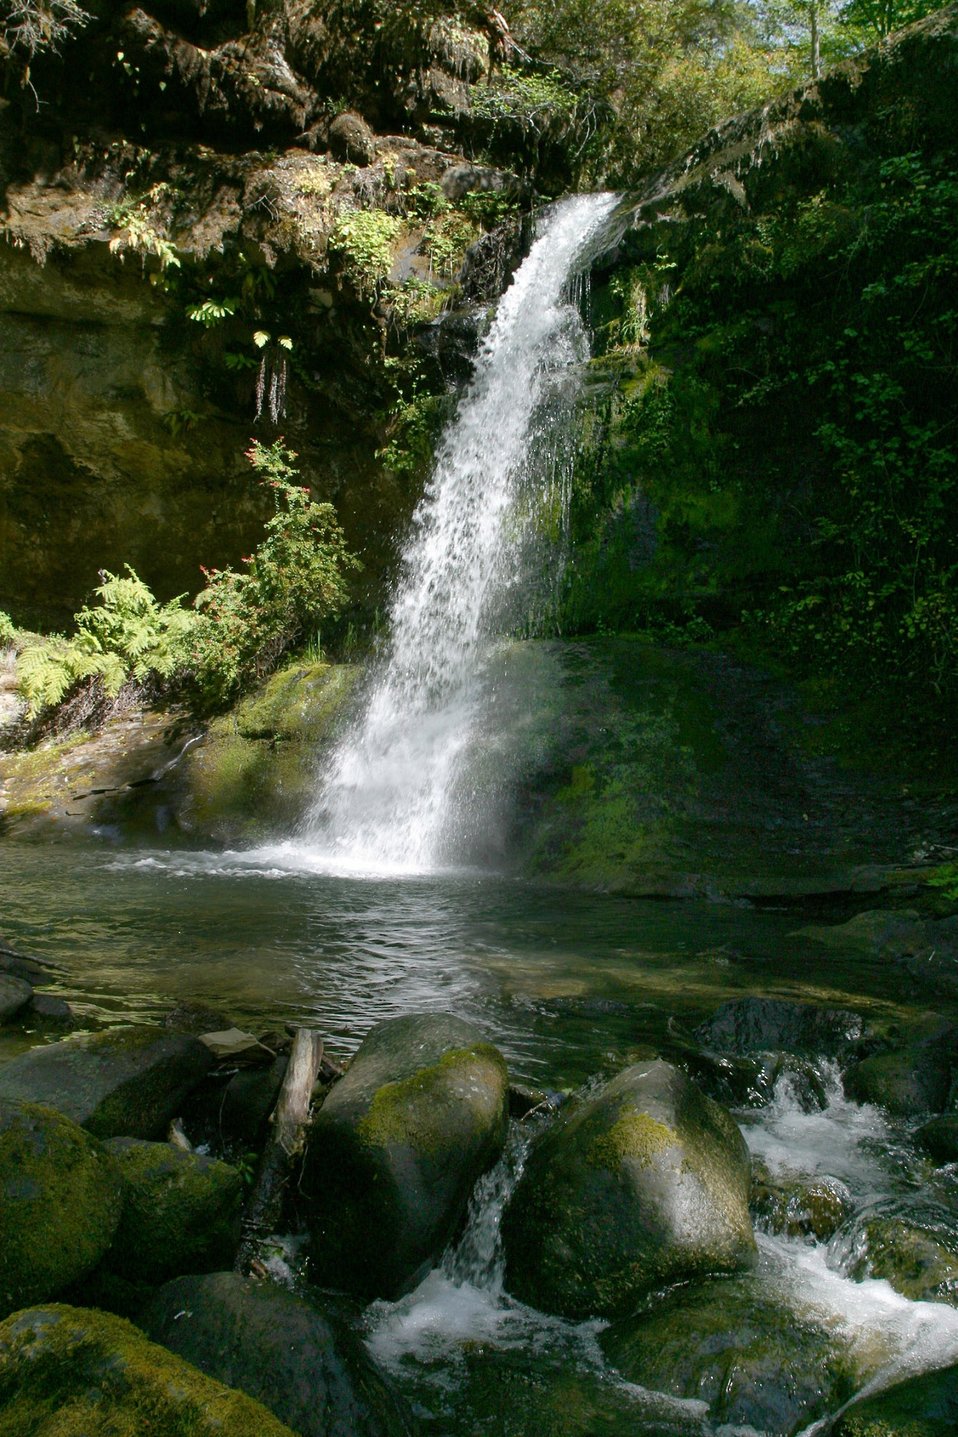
Wild section of the Rogue River from Grave Creek to Foster Bar May 19 to May 22.